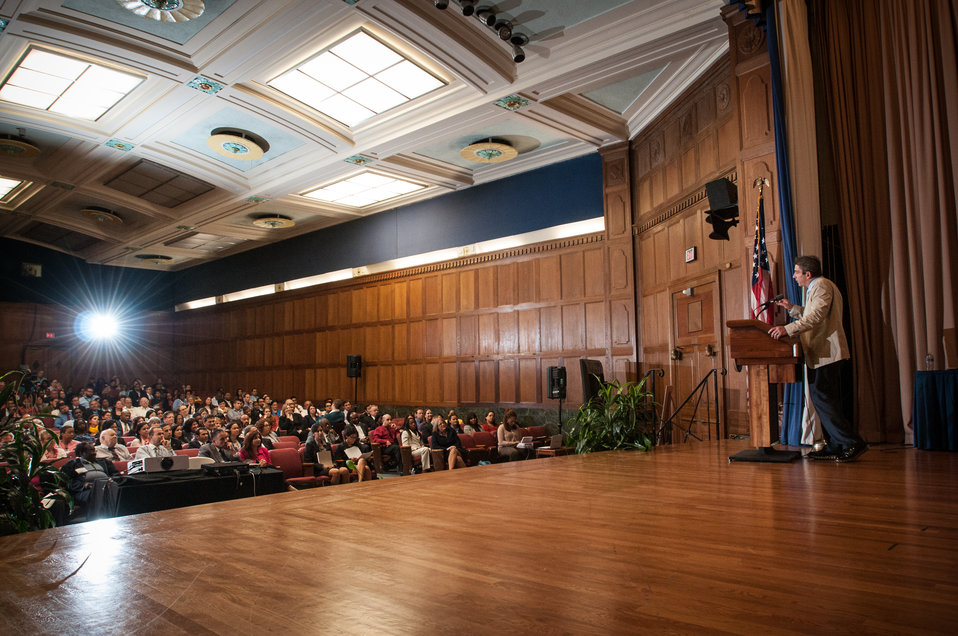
Keynote Speaker Poet Richard Blanco talks about differences in culture, language, and his childhood,at the 2013 National Hispanic Heritage Month ”Hispanics: Serving and Leading our Nation with Pride and Honor,” on Thursday, Sept. 19, 2013, in the Jefferson Auditorium, USDA Headquarters, Washington, D.C. Mr. Blanco stands as the youngest, first Latino, and first openly gay person to serve as the Presidential inaugural poet, on January 21 of this year.